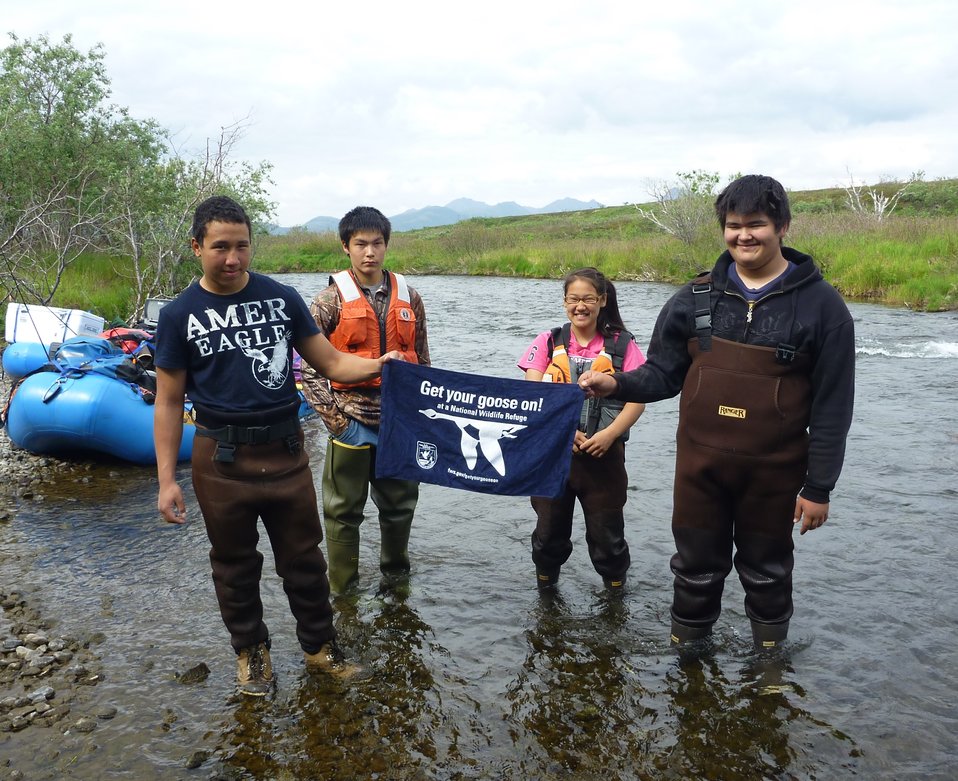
GYGO! - Alaska Style!

These youngsters Get Their Goose On! at Togiak National Wildlife Refuge in southwest Alaska.

The refuge supports 35 species of fish, 30 species of terrestrial mammals, 17 species of marine mammals, and 201 bird species.